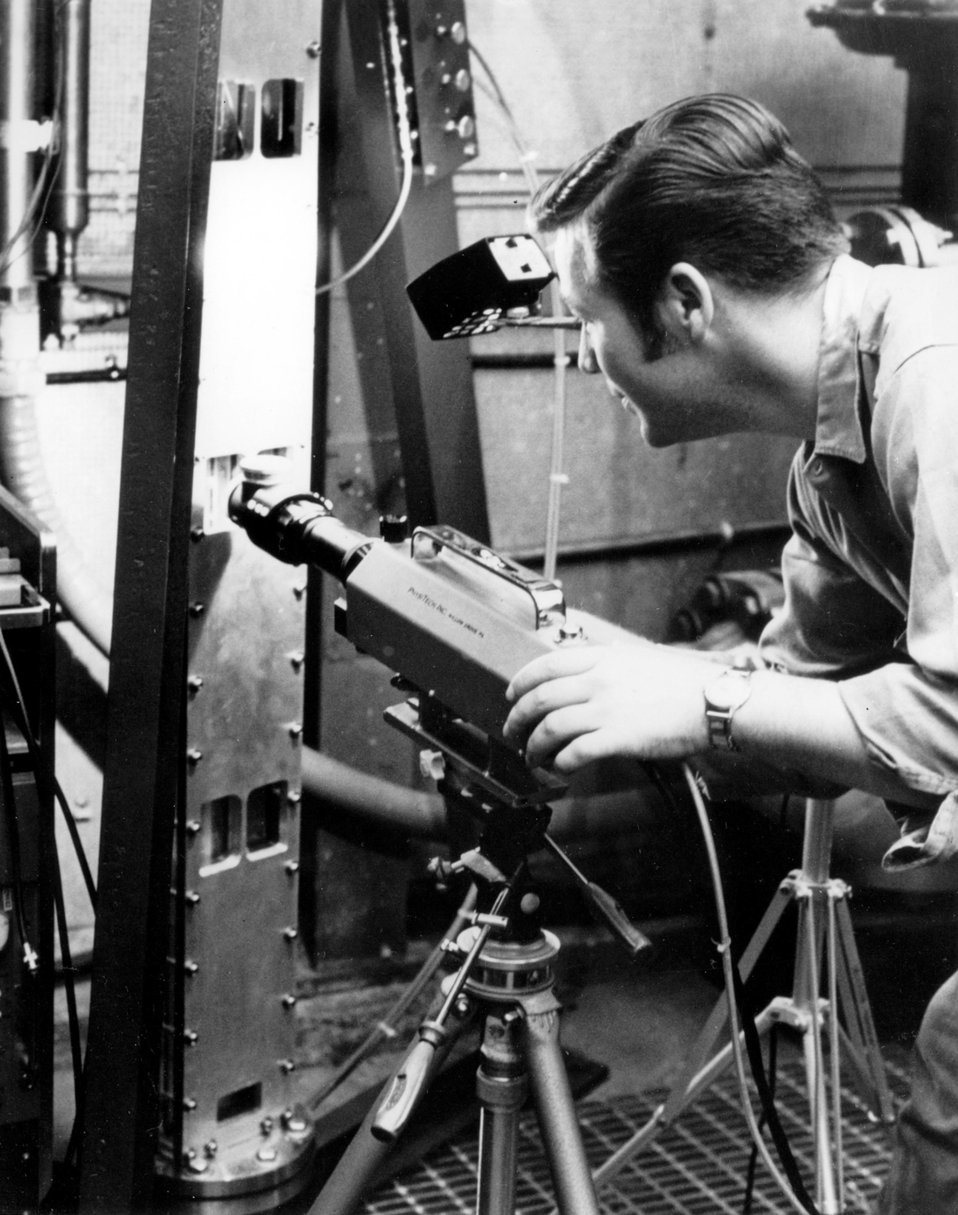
Vibration coefficients of experimental reactor fuel elements are determined at Argonne through the use of optical tracking instrument.
c.1970